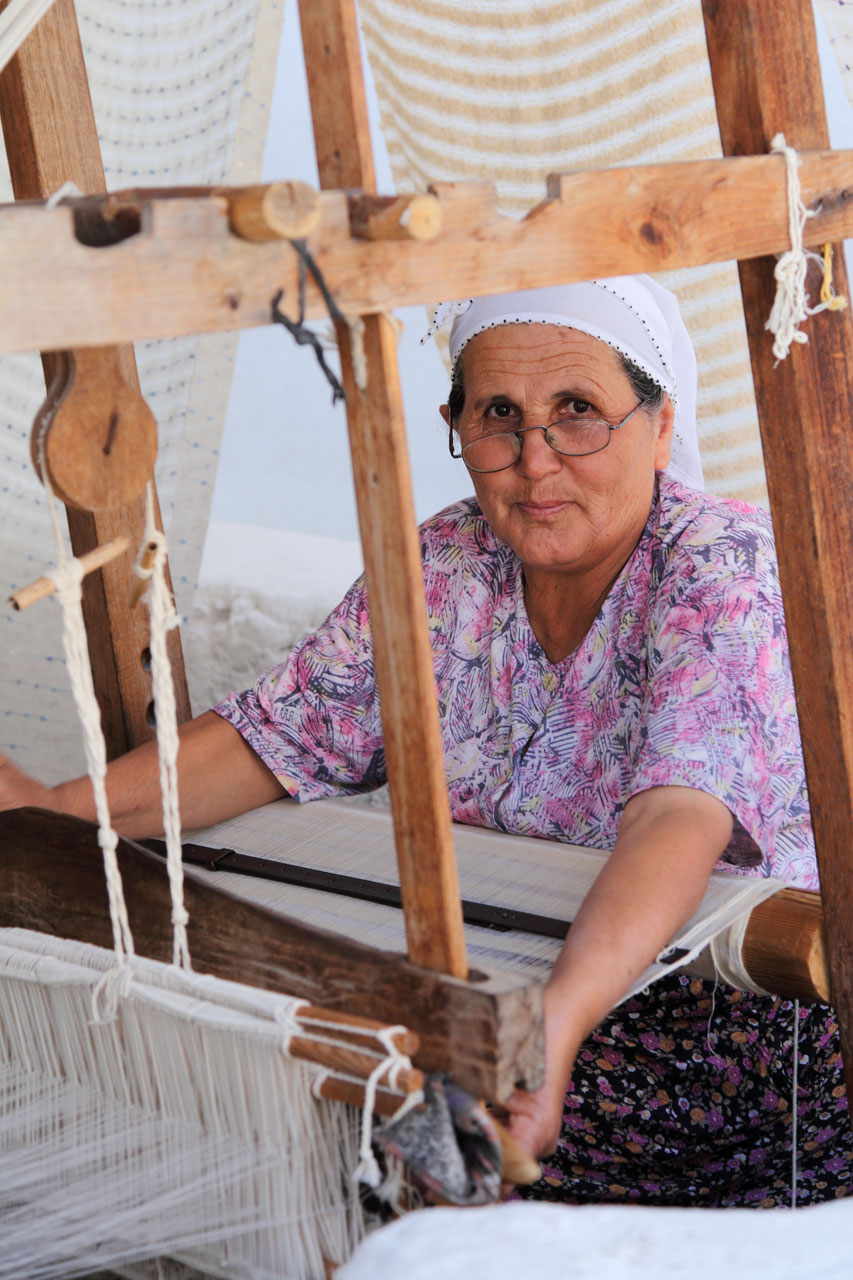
Traditional weaver

Traditional scarf weaver in turkey.